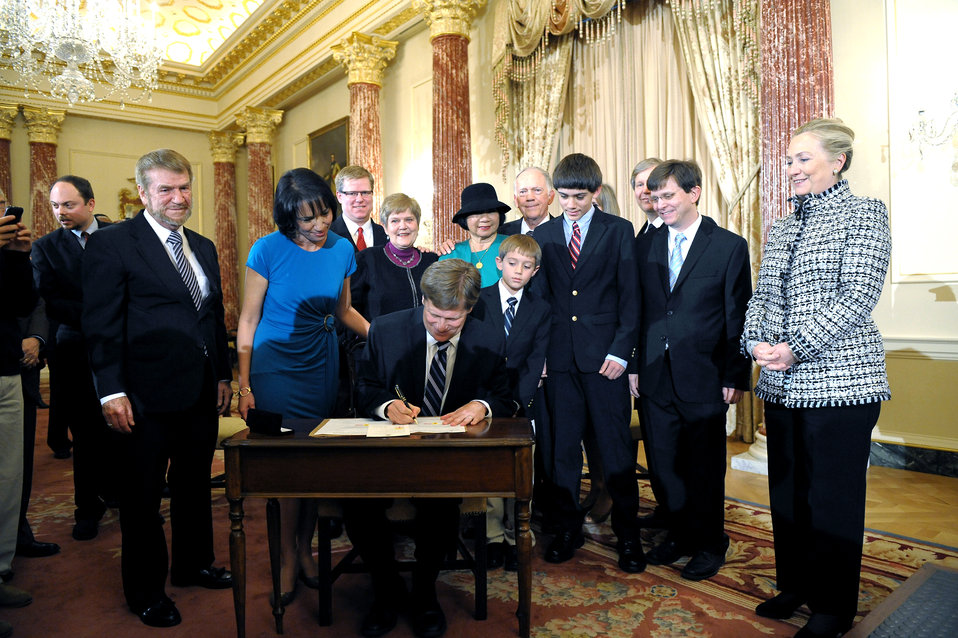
Secretary Clinton Holds a Swearing-In Ceremony for Ambassador-Designate McFaul

U.S. Secretary of State Hillary Rodham Clinton holds a swearing-in ceremony for U.S. Ambassador-designate to Russia Mike McFaul at the U.S. Department of State in Washington, D.C., on January 10, 2012.